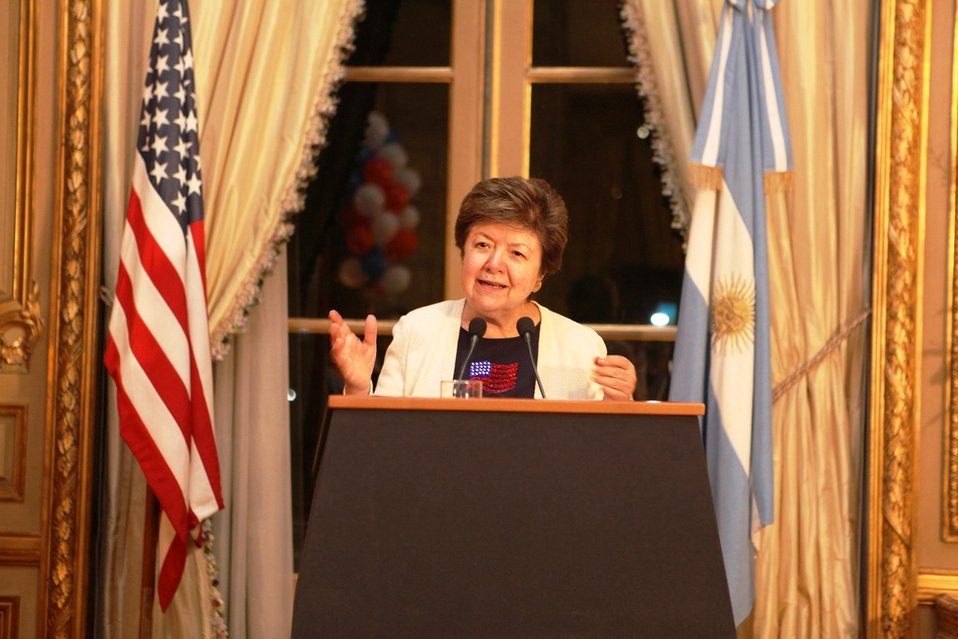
Ambassador Martinez Delivers Remarks at the Embassy's 2012 Election Event

U.S. Ambassador to Argentina Vilma Martinez delivers remarks at the Embassy's 2012 Election Night event in Buenos Aires, Argentina, November 6, 2012.